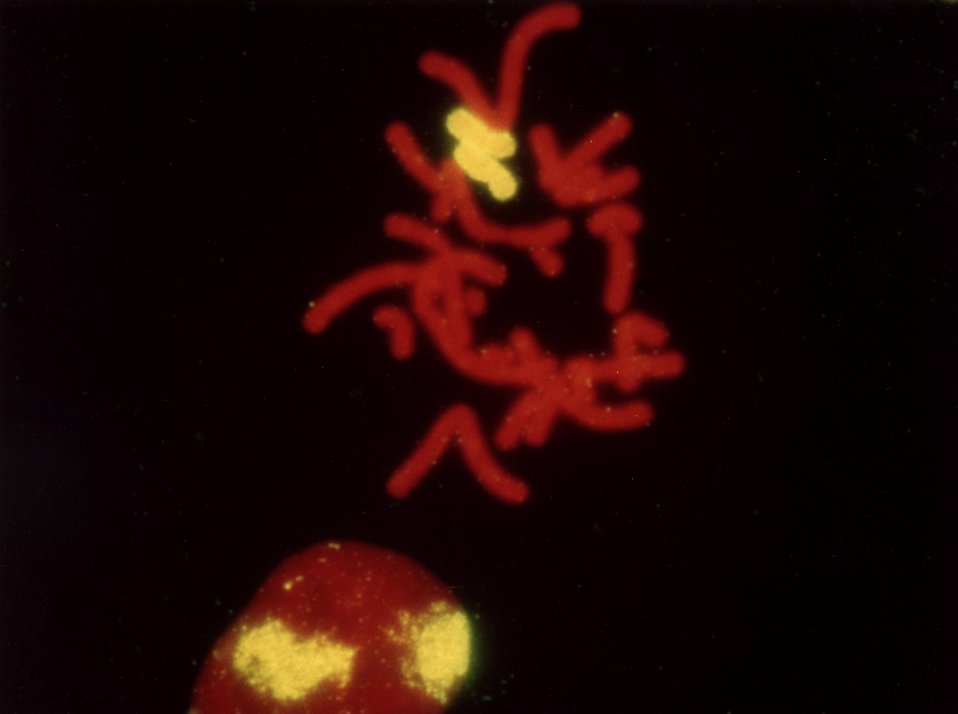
Detecting Radiation-Induced Chromosome Trans locations. Scientists at the Lawrence Livermore National Laboratory are developing a chromosome stain that is made up of fluorescent biotin-labeled DNA fragments.Shown here to demonstrate this elegant technique is a metaphase spread of hamster chromosomes (orange) with two human chromosomes (yellow).